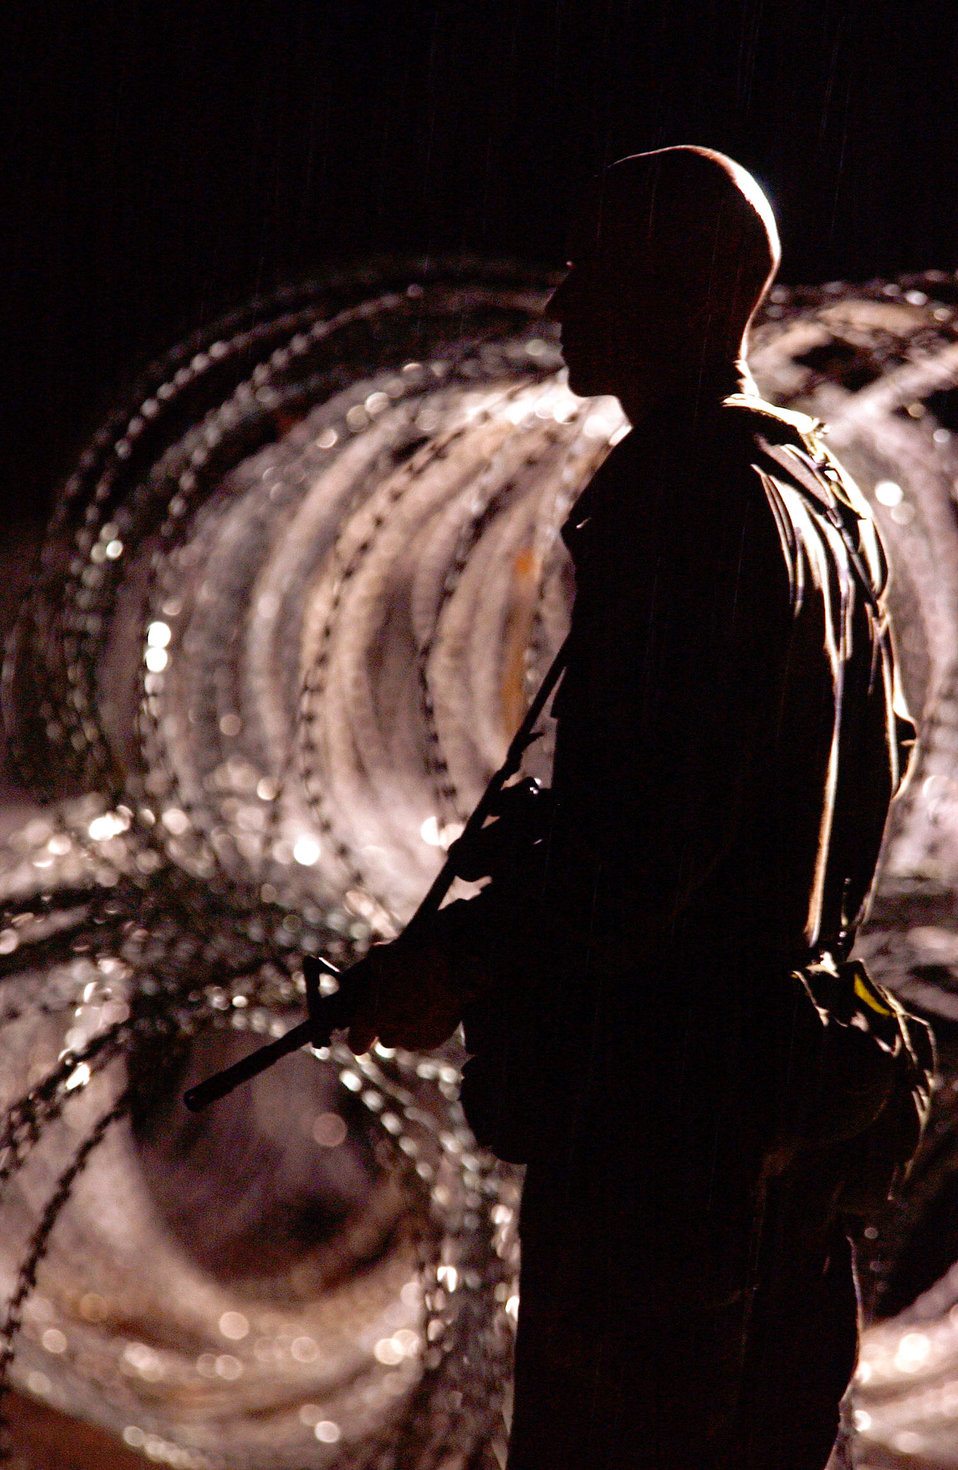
Solitary sentry

LUNGI, Sierra Leone -- Staff Sgt. Jason Bren, 786th Security Forces Squadron, Sembach Annex, Germany, provides security for the operations and maintenance center at Lungi Airport. The 398th Air Expeditionary Group is currently in Sierra Leone to provide personnel recovery and emergency evacuation capability for the humanitarian assistance survey team and the fleet antiterrorism security team in Liberia.